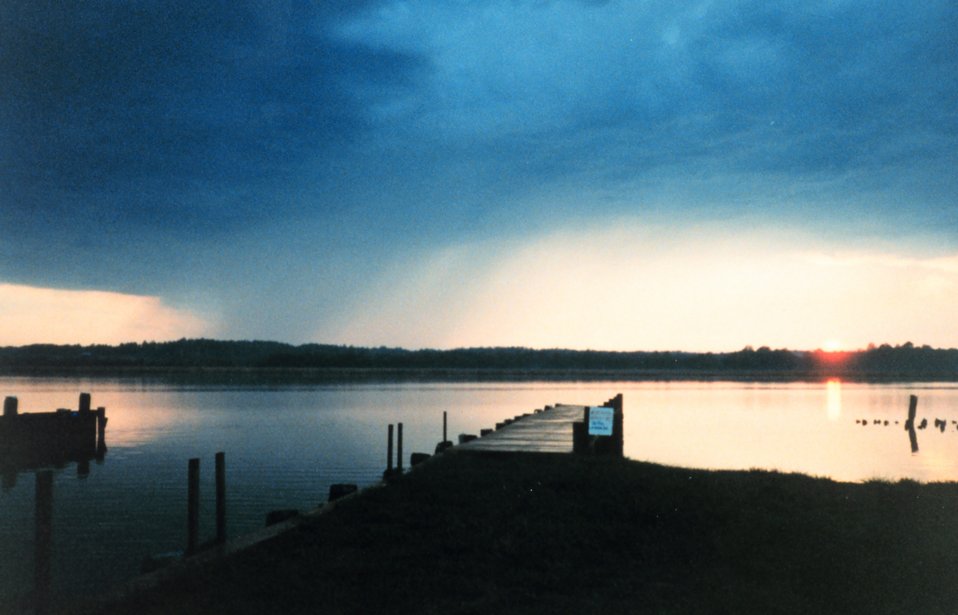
Sunset and a small rain storm across the river